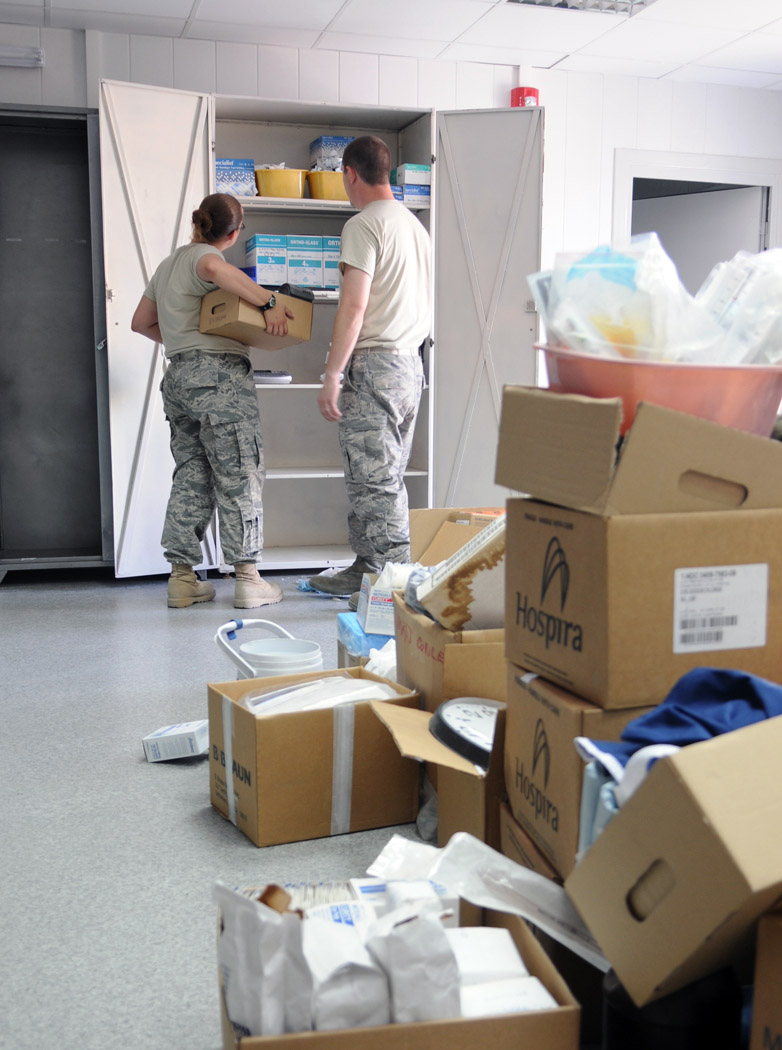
Medical members welcome four walls after six years in tents

376th Expeditionary Medical Group members move medical supplies into the new medical building July 15 at Manas Air Base, Kyrgyzstan. After nearly seven years operating out of a tent facility, the 376th EMDG moved in to a hardened facility.